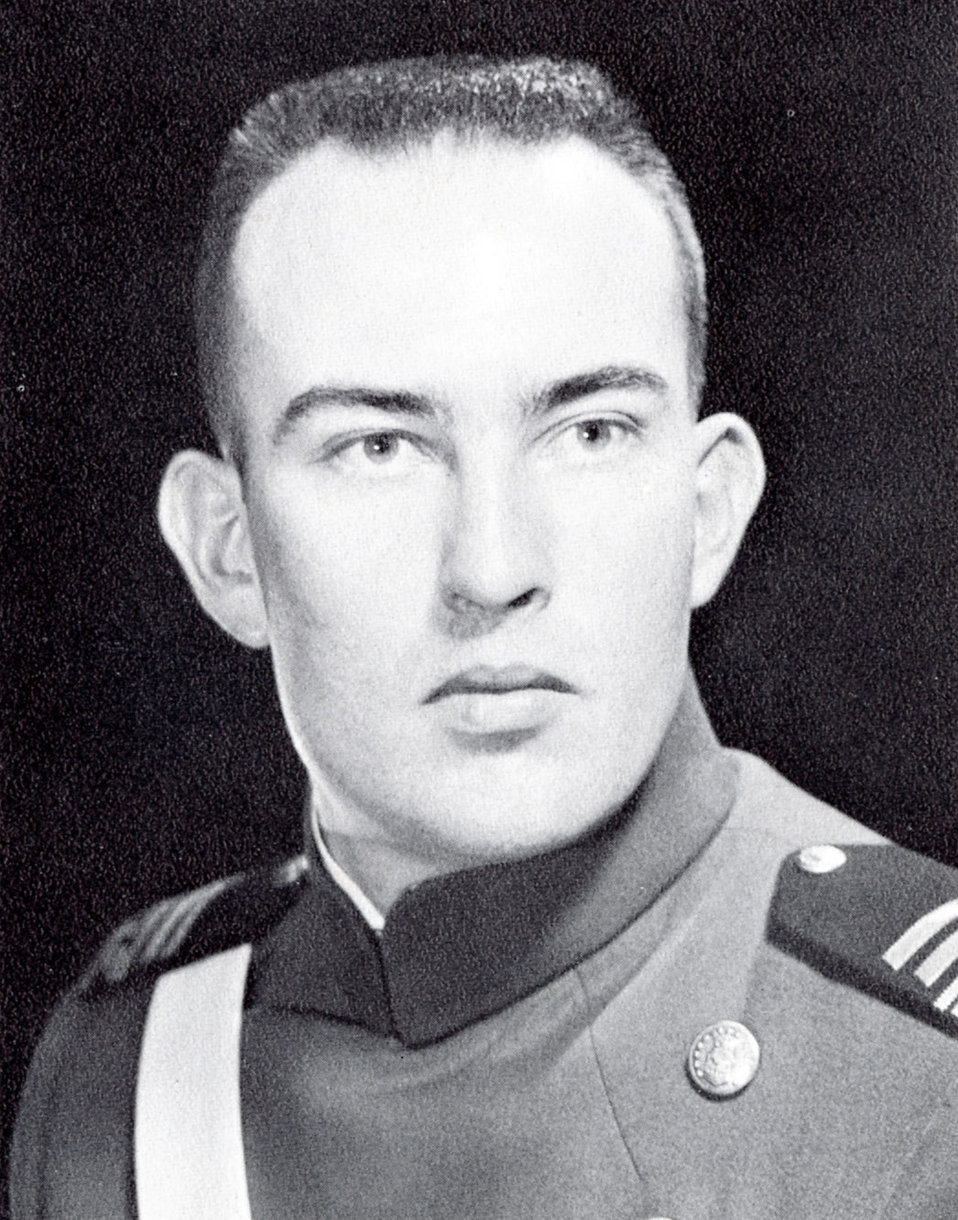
Academy lays MIA grad to rest after 39 years

Maj. Burke Morgan, shown here as a senior at the U.S. Air Force Academy, will be laid to rest Sept. 7 at the Air Force Academy Chapel and Cemetery. The 1961 academy graduate was missing in action in Southeast Asia 39 years.